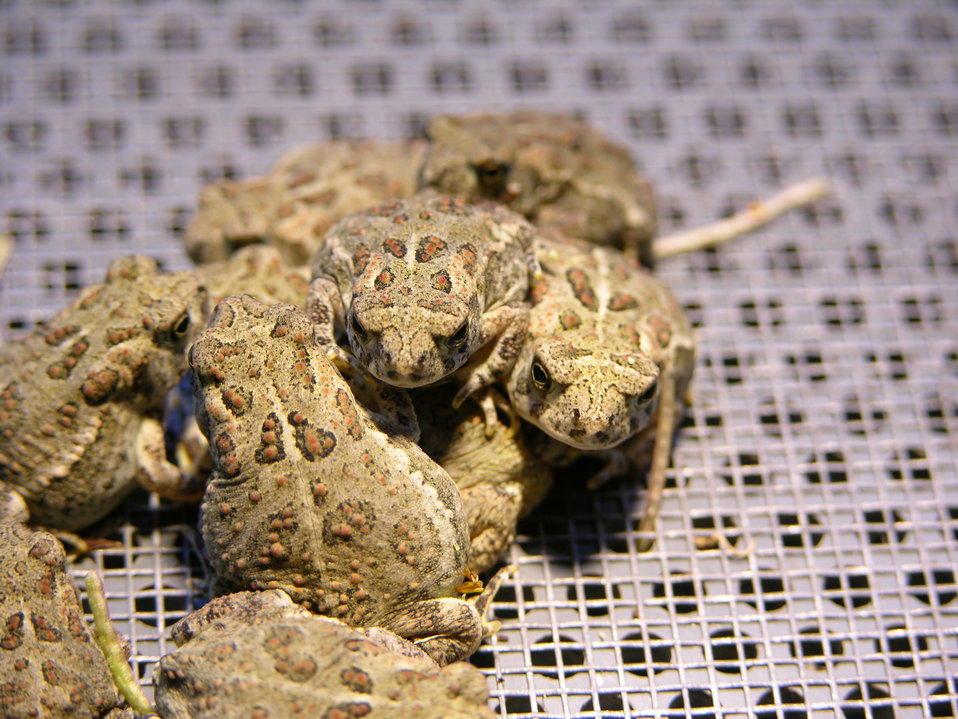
Wyoming Toads